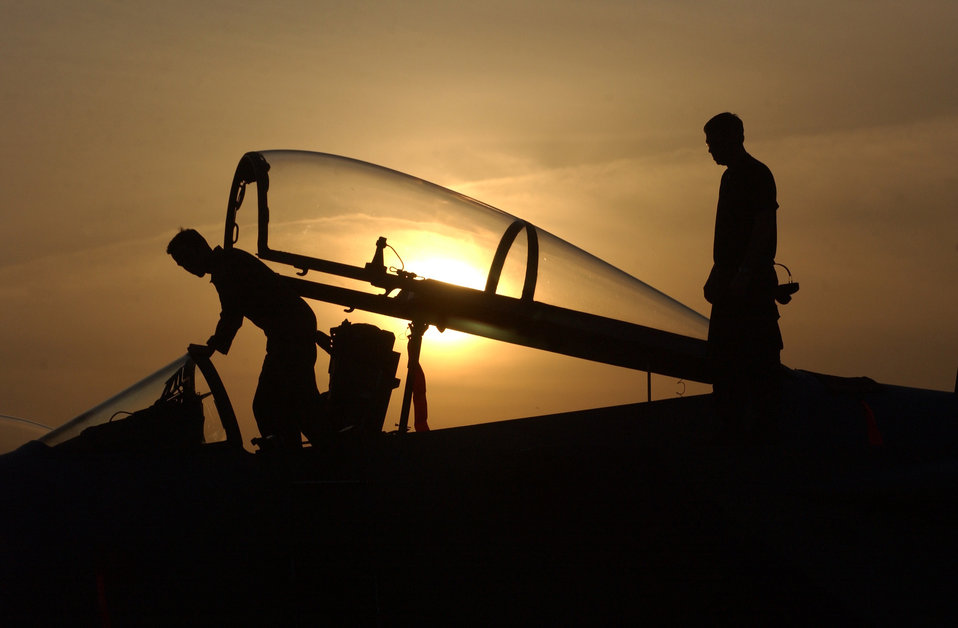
Eagle sunset

GWAILOR AIR FORCE STATION, India -- Crew chief Staff Sgt. Jason Carlson (right) waits for Capt. Grant Lewis to exit so he can put his F-15 Eagle to bed for the evening. Sergeant Carlson and Captain Lewis, along with 140 airmen from Elmendorf Air Force Base, Alaska, are participating in Cope India 04 here. Cope India is a bilateral dissimilar air combat exercise. Sergeant Carlson is assigned to the 19th Aircraft Maintenance Unit, and Captain Grant is assigned to the 19th Fighter Squadron.